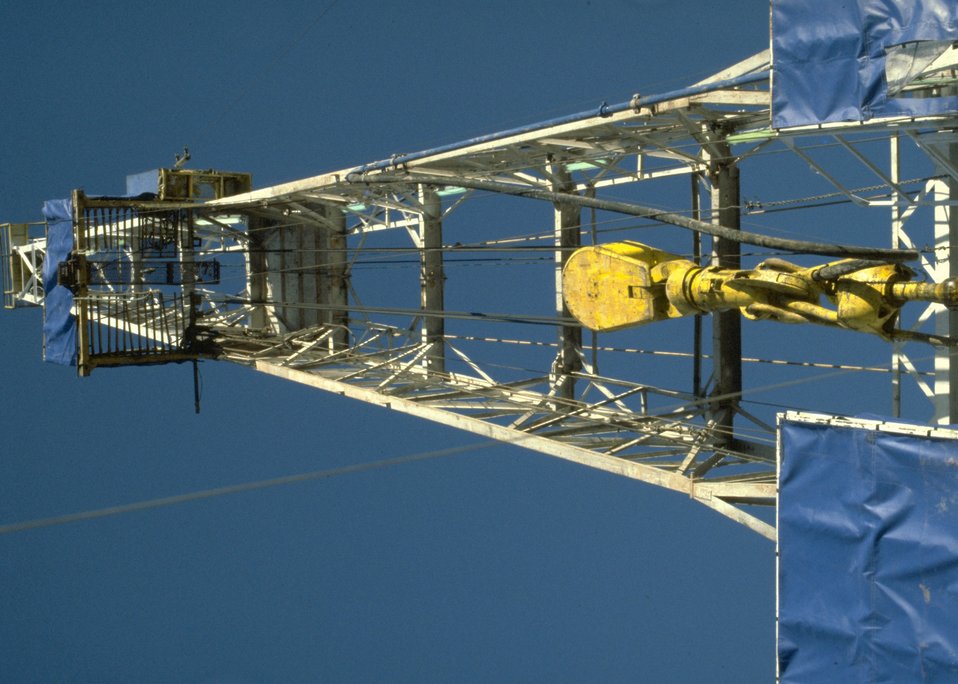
Deep well rig.